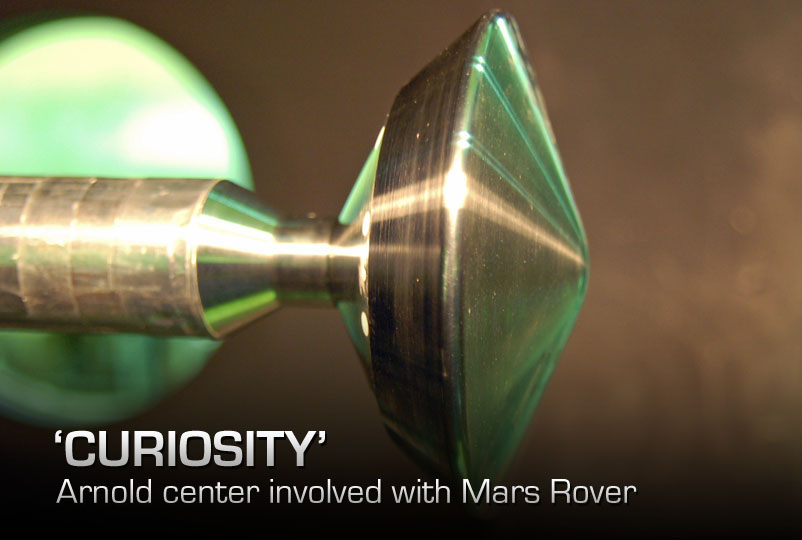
Curiosity Mars Rover

A 1/30-scale model of the aeroshell configuration for the Mars Science Laboratory underwent aerodynamic atmospheric descent testing at AEDC's Hypervelocity Wind Tunnel 9 Facility.